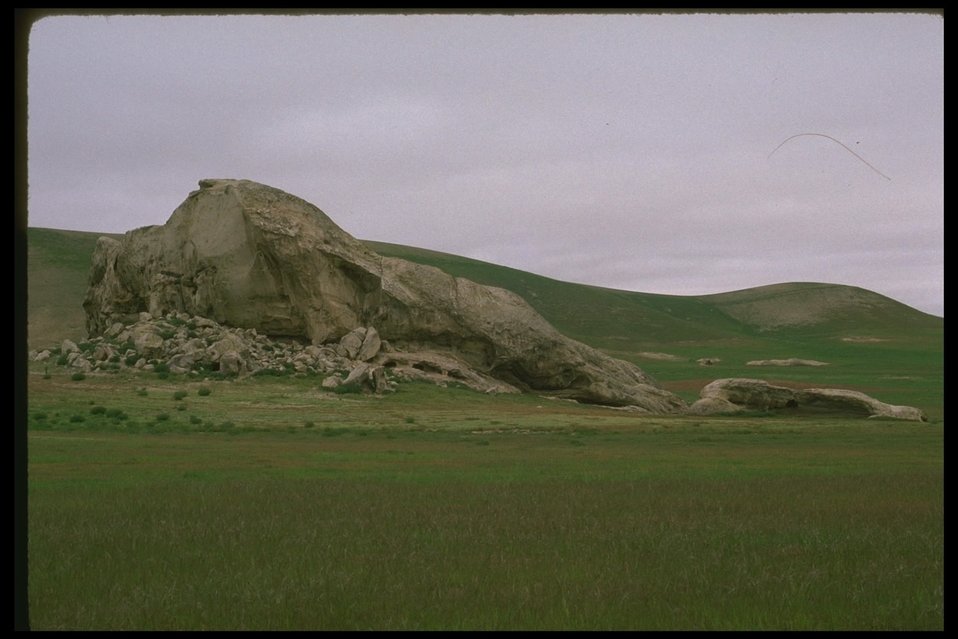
Carrizo plain National Monument Painted rock